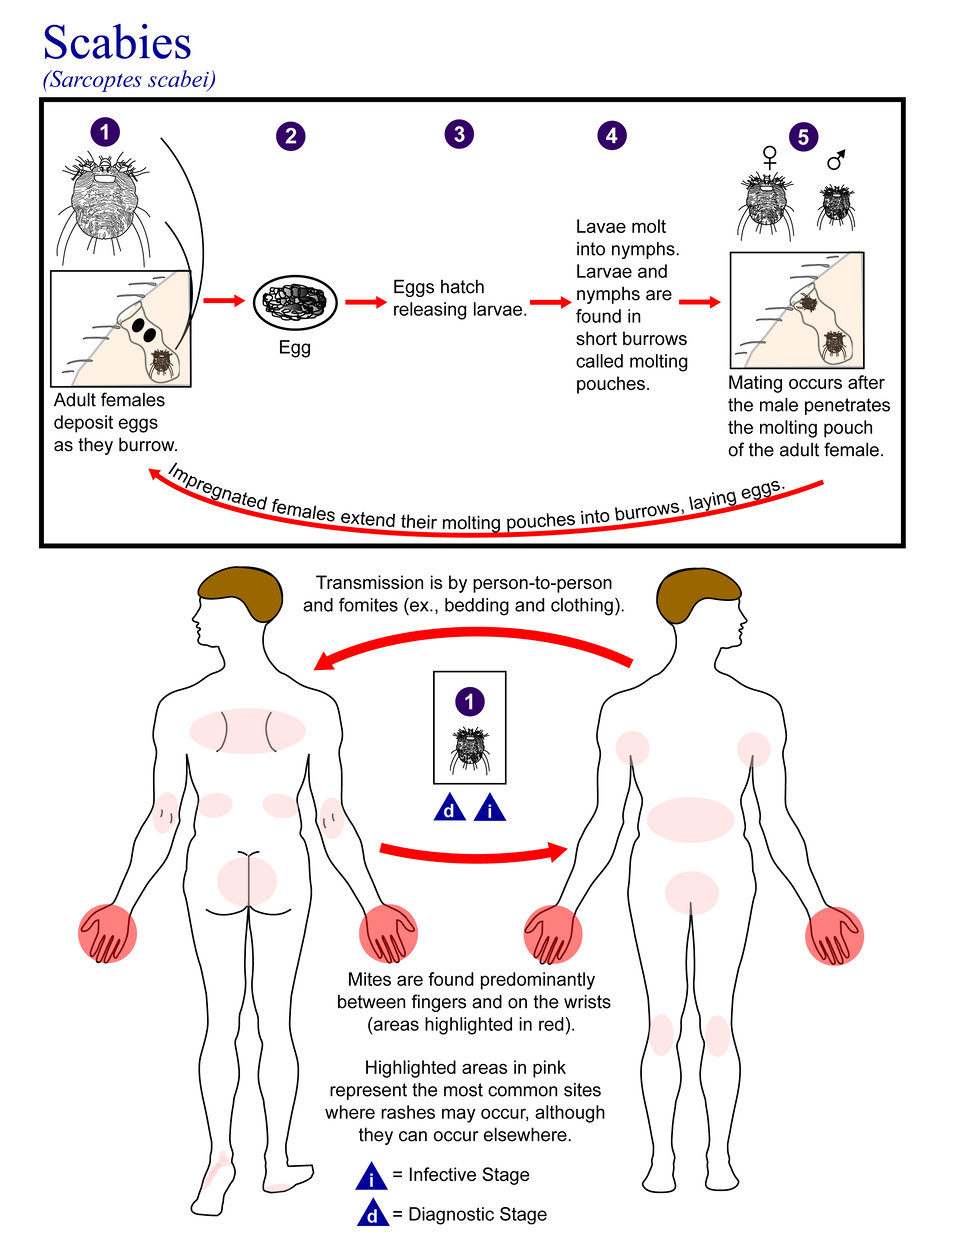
This is an illustration of the life cycle of Sarcoptes scabei, the causal agent of Scabies.